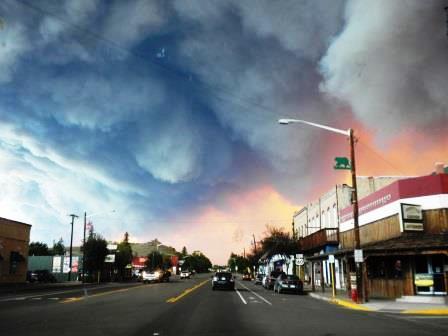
Smoke fills the air as the West Fork Complex Fire nears Del Norte, CO. The West Fork Complex Fire is made of four fires, Papoose Fire, East Zone of West Fork Fire, West Zone of West Fork Fire, and Windy Pass Fire. The fires located in the vicinity of Pagosa Springs, CO began on Jun. 05, 2013 by lightning strikes. The multiple fires have consumed approximately 70, 262 acres.